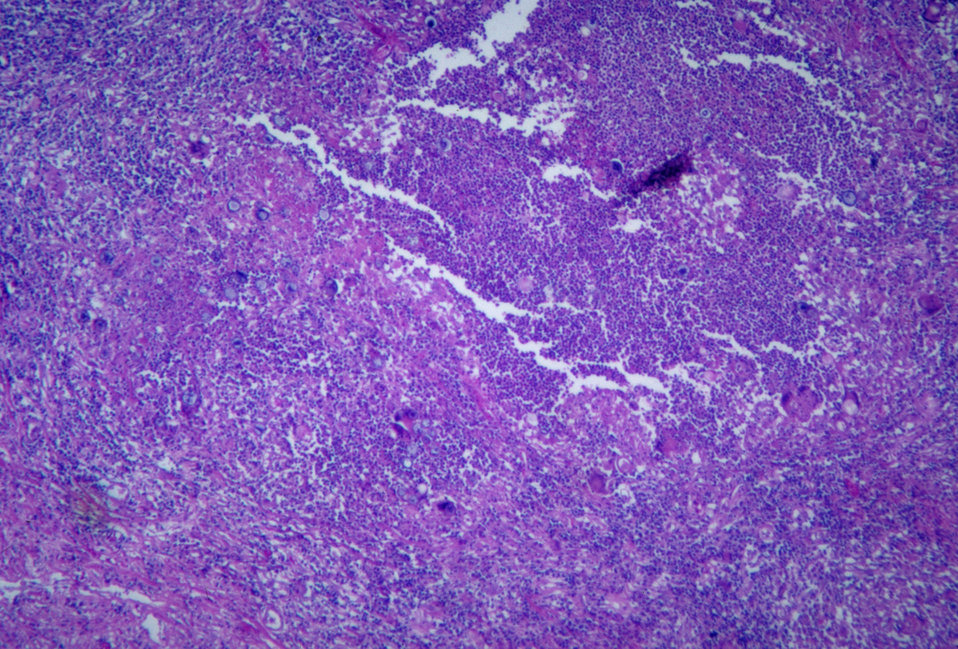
Note the histopathologic changes due to coccidioidomycosis of the lung caused by Coccidioides immitis.